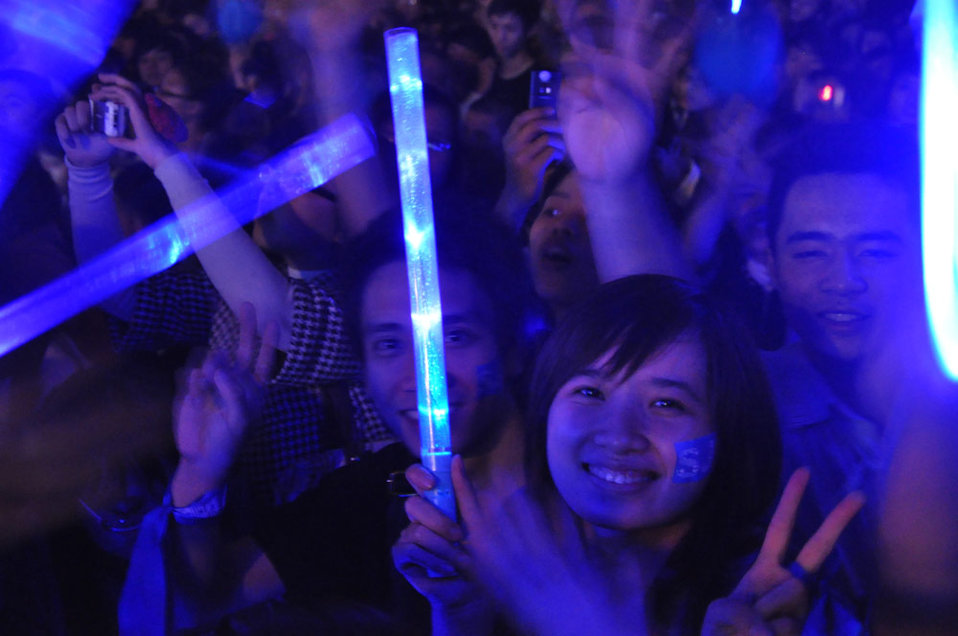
MTV EXIT Hanoi concert March 27, 2010

Blue is the color for Super Junior fans.